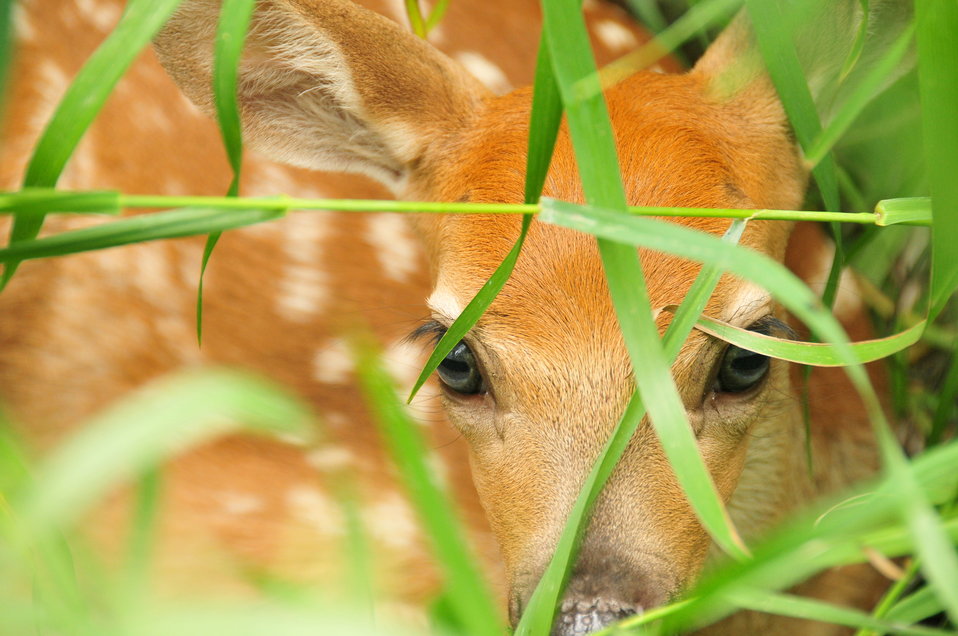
White tailed deer fawn Sand Lake NWR

A white tailed deer fawn lays motionless on Sand Lake NWR.